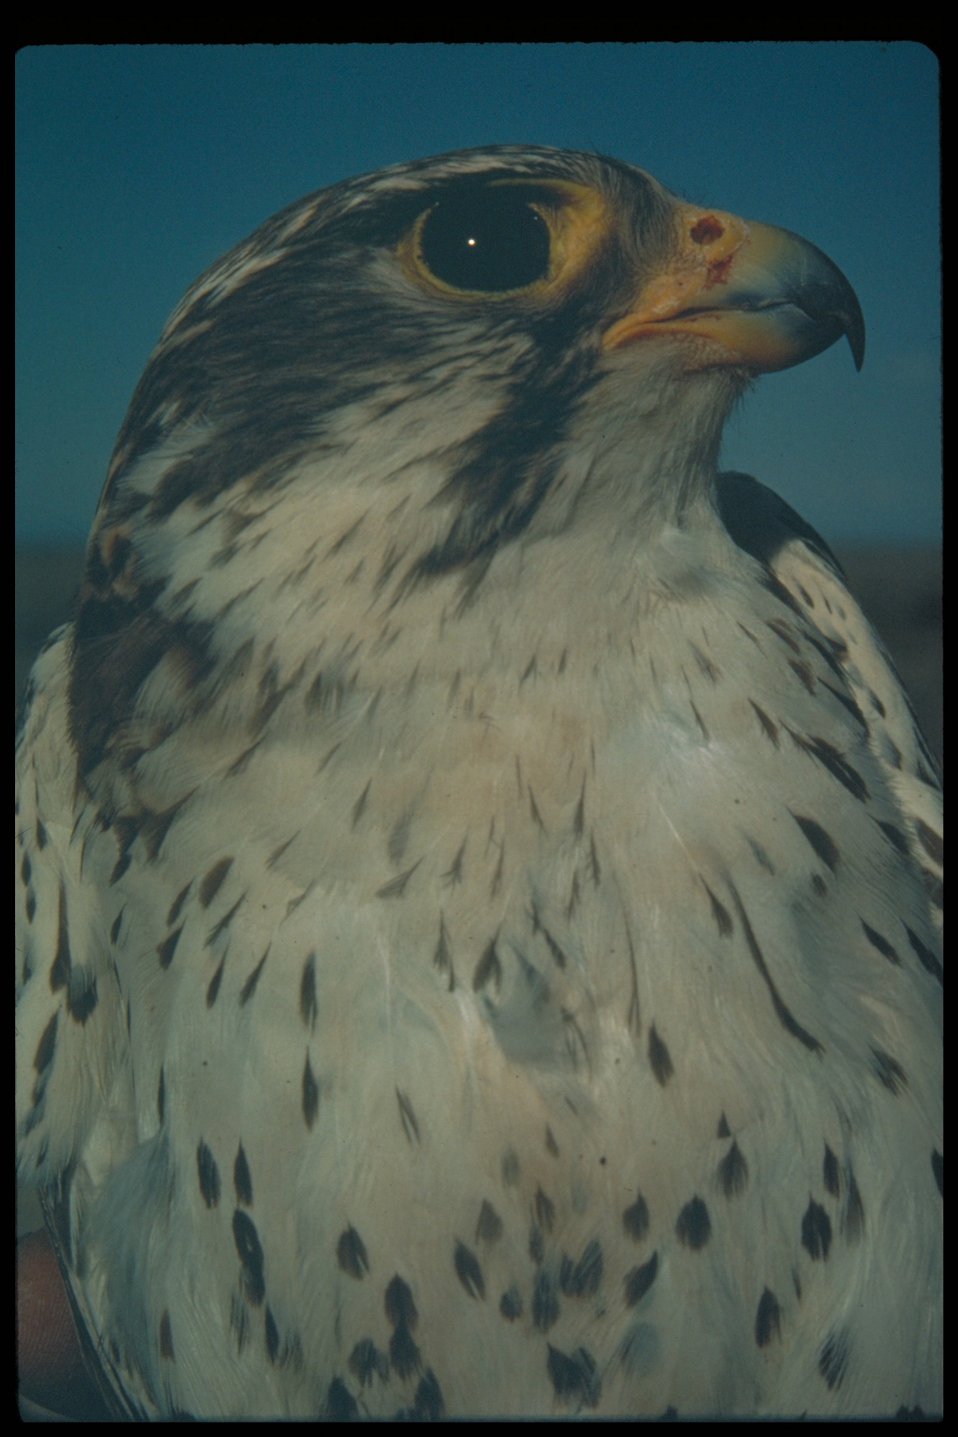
Prarie Falcon Birds of Prey National Conservation Area BOP Owyhee Field Office LSRD Lower Snake River District